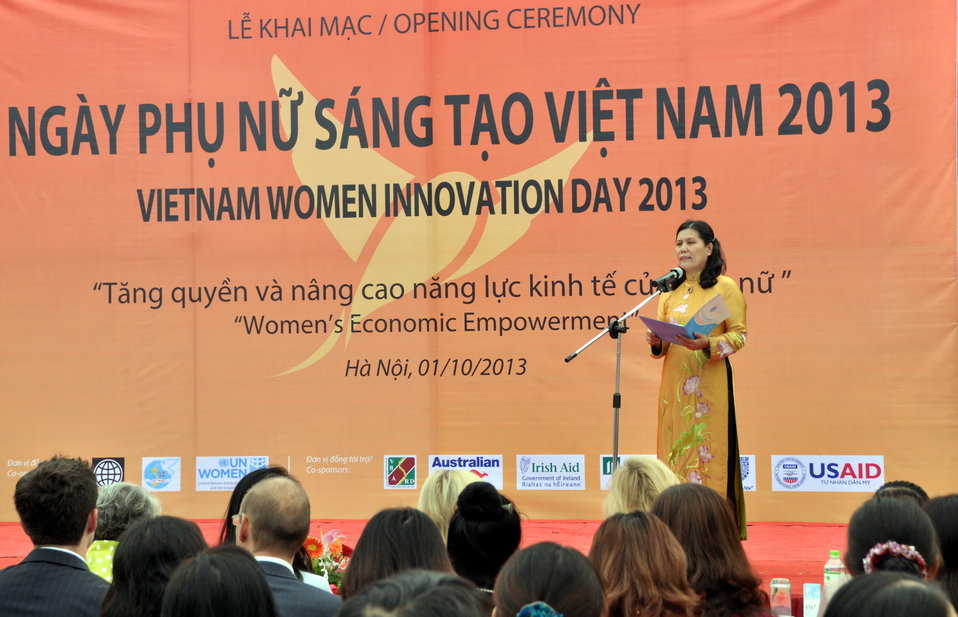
Vietnam Women’s Union President Nguyen Thi Thanh Hoa addresses the launching ceremony of Vietnam Women Innovation Day 2013

Hanoi, October 1, 2013.